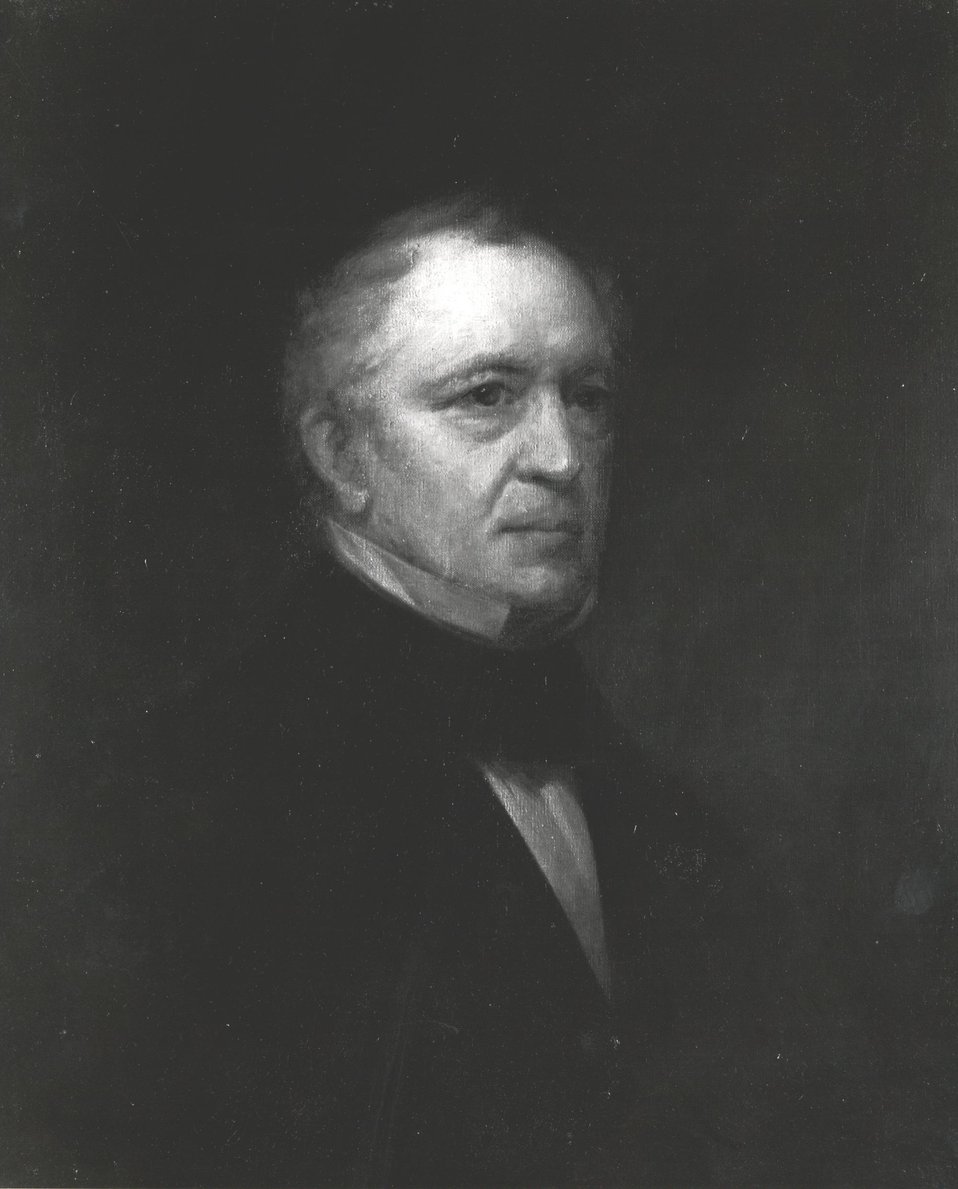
Edward Everett, U.S. Secretary of State, November 6, 1852 to March 3, 1853